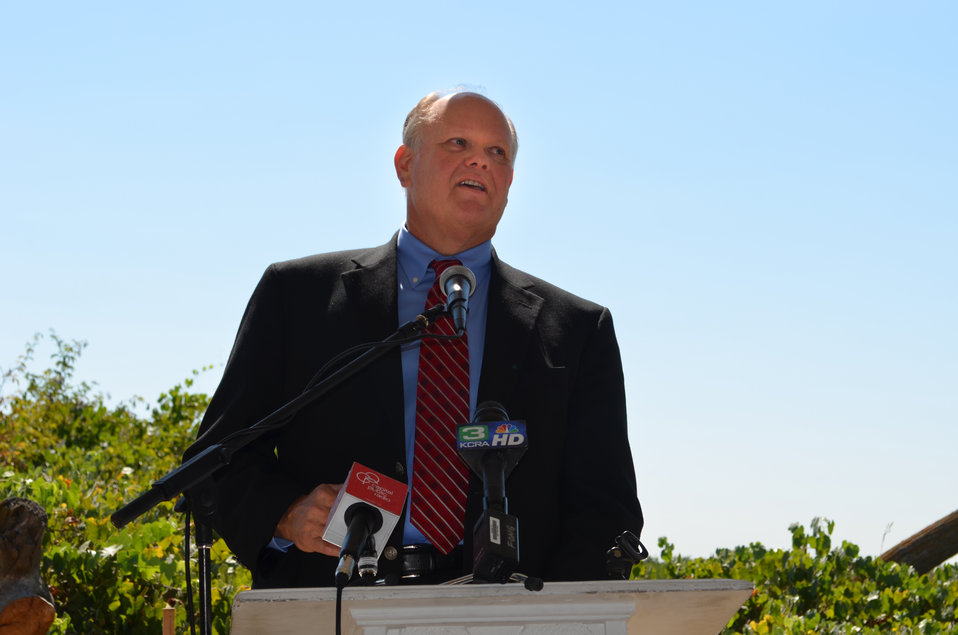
Levee improvements underway in Sutter County

Lee Bass, acting deputy for programs and project management for the U.S. Army Corps of Engineers Sacramento District, addresses a crowd of nearly 200 in attendance to celebrate the Aug. 7, 2013 groundbreaking of a massive levee improvement project on the Feather River in Yuba City, Calif.